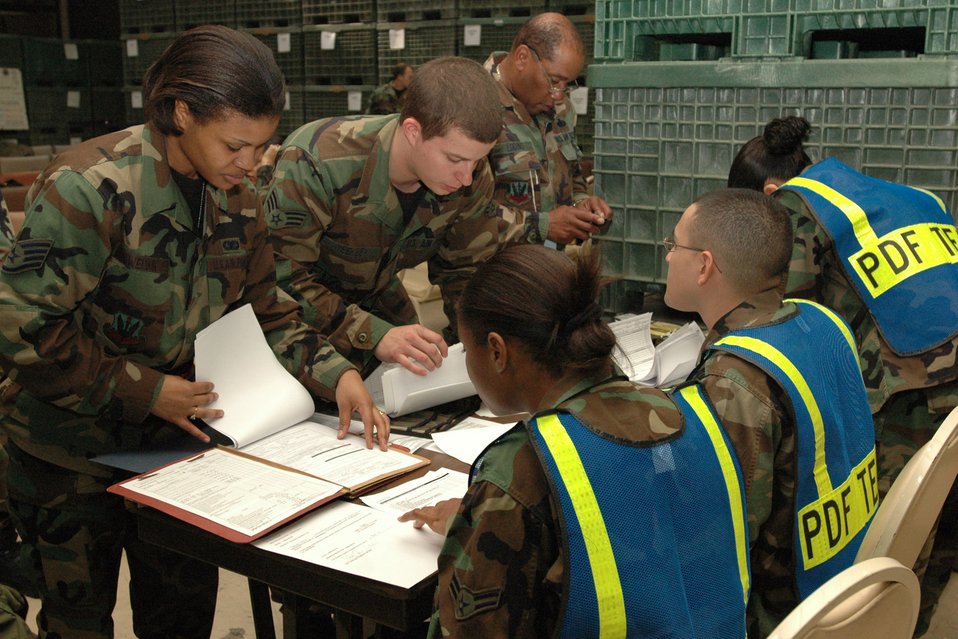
Predeployment briefings

LANGLEY AIR FORCE BASE, Va. (AFPN) -- Airmen get a financial information briefing before their deployment here Jan. 13.